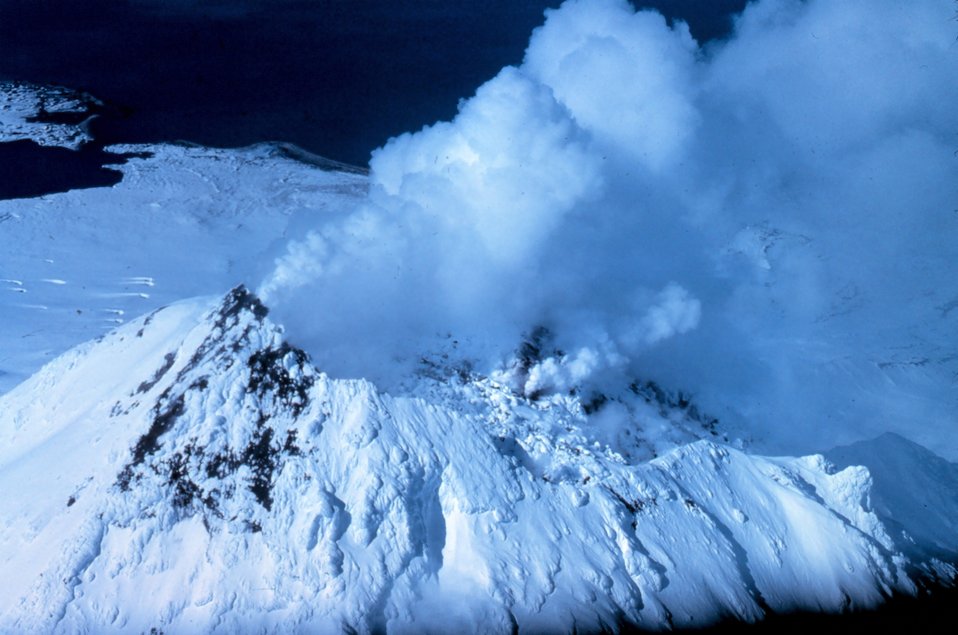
Snow and steam make an incongruous picture on Augustine Volcano.